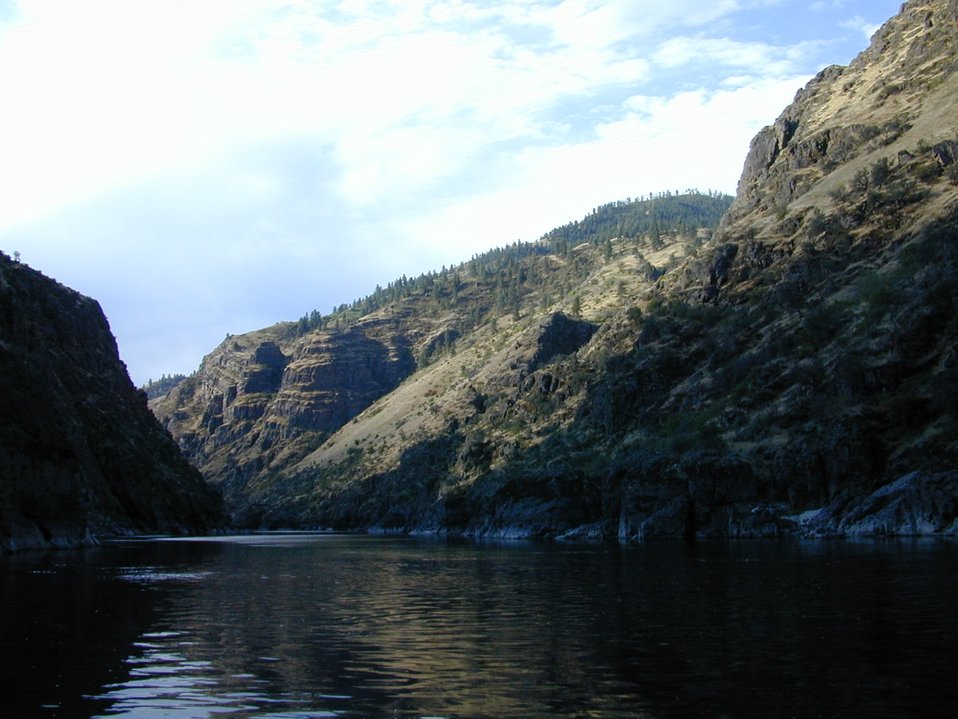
Scenic shot of Lower Salmon River Cottonwood Field Office UCSC Upper Columbia Salmon Clearwater District